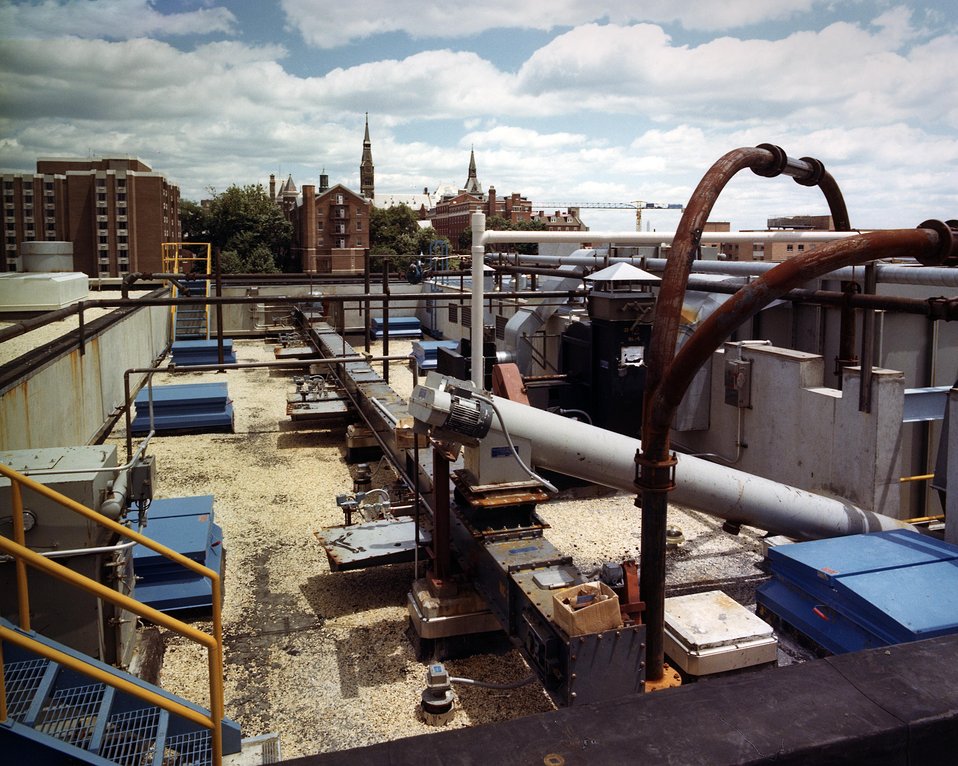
EXTERIOR VIEW OF GEORGETOWN UNIVERSITY'S ATMOSPHERIC FLUID-IZED BED COMBUSTION SYSTEM.

THE PLANT IS CAPABLE OF BURNING HIGH SULFUR COAL WHILE MAINTAINING STACK EMISSIONS WITHIN EPA AND WASHINGTON, D C ESTABLISHED POLLUTION LIMITS. IN ADDITION, THE NEW SYSTEM GENERATES RELATIVELY LOW QUANTITIES OF NITROGEN OXIDES WHICH ARE NOW CONSIDERED TO BE SIGNIFICANT POLLUTANTS RESULTING FROM COMBUSTION.